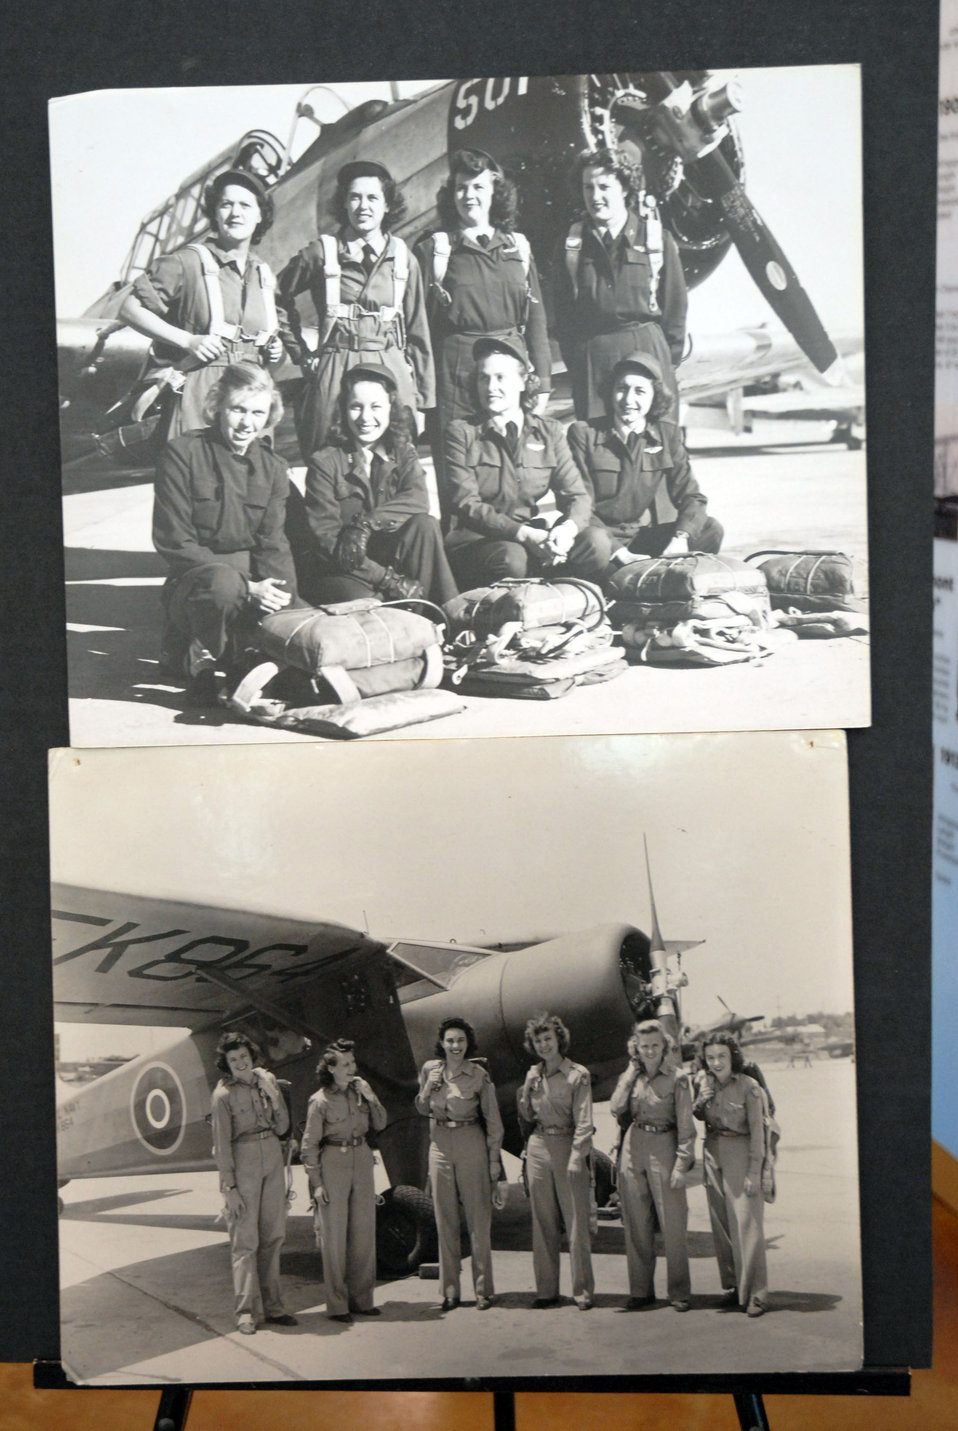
Texas WASP honored by senator

Featured at the presentation of a commemorative copy of Bill 111-40, to World War II Women Airforce Service Pilot aviators, which awarded the WASP the Congressional Gold Medal, the highest award Congress can bestow a civilian for service to their country Nov. 11, 2009, at Love Field in Dallas, were several historic photos of various WASP more than 60 years ago.